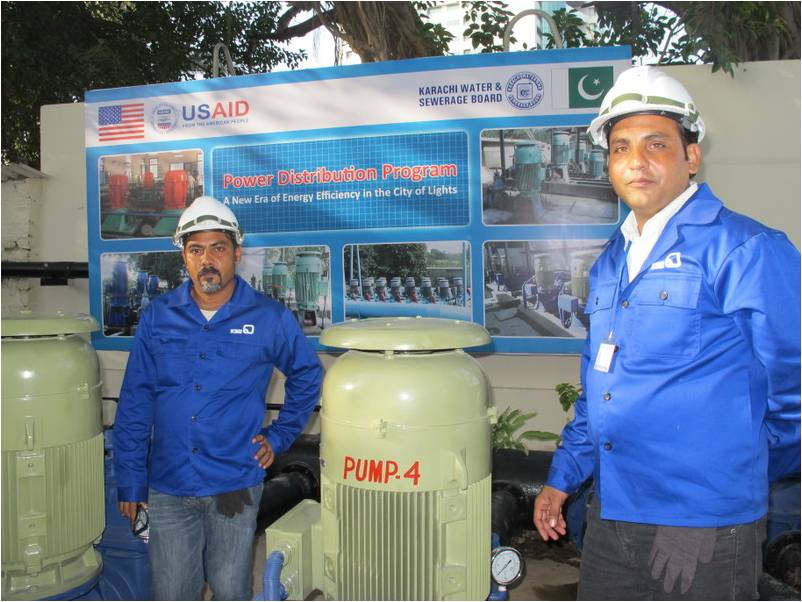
Technical experts along with the new equipment